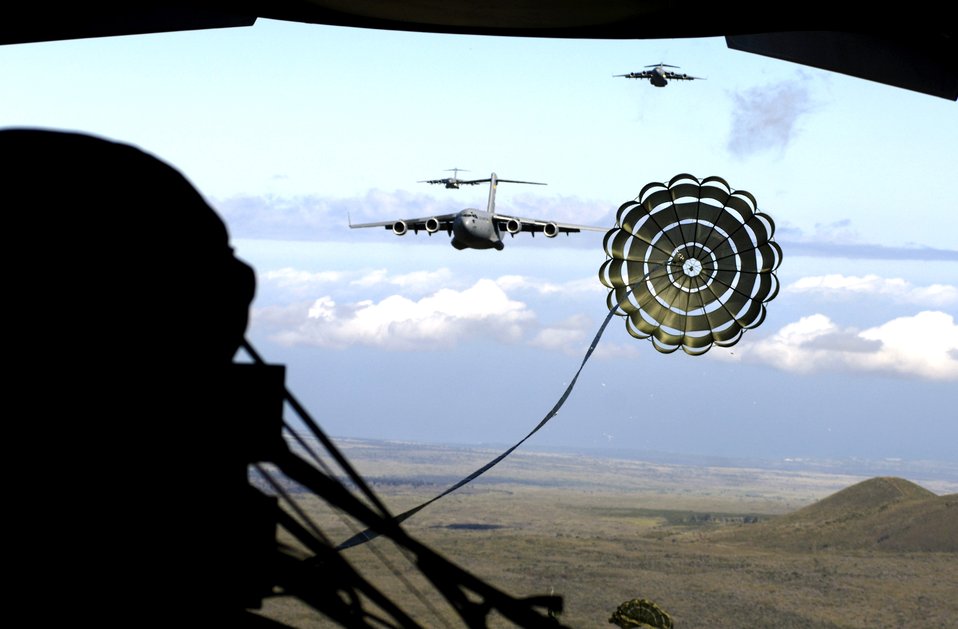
C-17 airdrop training mission

An extraction chute opens over the drop zone during an airdrop training mission May 16, 2006. The C-17 Globemaster IIIs are from the 535th Airlift Squadron, Hickam Air Force Base, Hawaii and are conducting the training to provide multi-element training for the pilots and maintain aircrew proficiency.